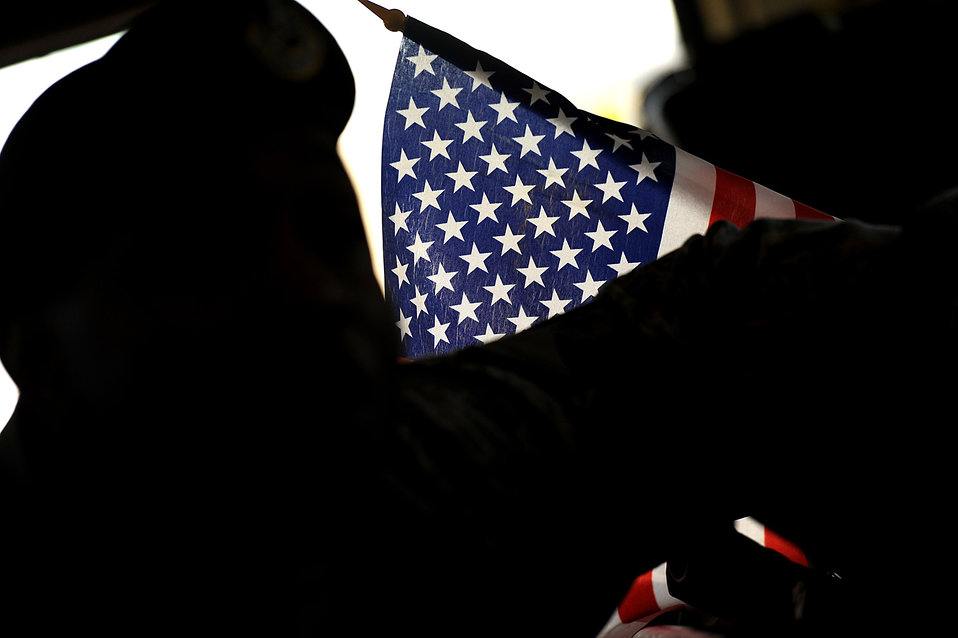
Langley SFS welcomes home deployed defenders

Members from the 633rd Security Forces Squadron ride on a bus to the Newport News, Va., airport to welcome home fellow squadron members Staff Sgt. John Duncan, Senior Airmen Kristian Robles Cruz and Amber Boyd, and Airman Basic Joseph Wesley on Nov. 2, 2011. The four Airmen deployed to Joint Base Balad, Iraq, in June, but returned home a couple of months early after President Obama announced the withdrawal of all U.S. troops from Iraq by the end of the year. The 633rd SFS is out of Joint Base Langley-Eustis, Va.